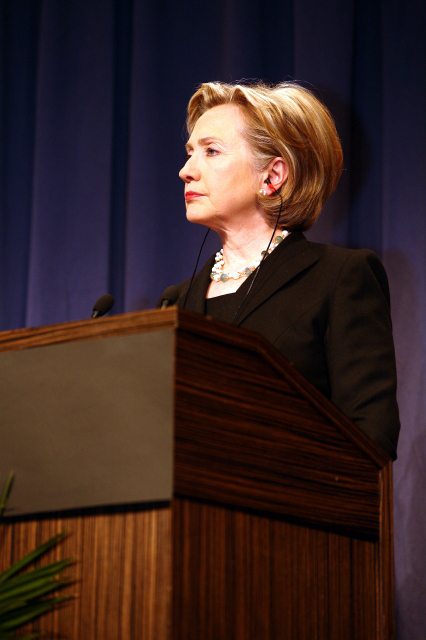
Press Conference With Russian Foreign Minister

Press conference after dinner meeting between U.S. Secretary of State Hillary Rodham Clinton and Russian Foreign Minister Sergey Lavrov in Geneva, Switzerland March 6, 2009.